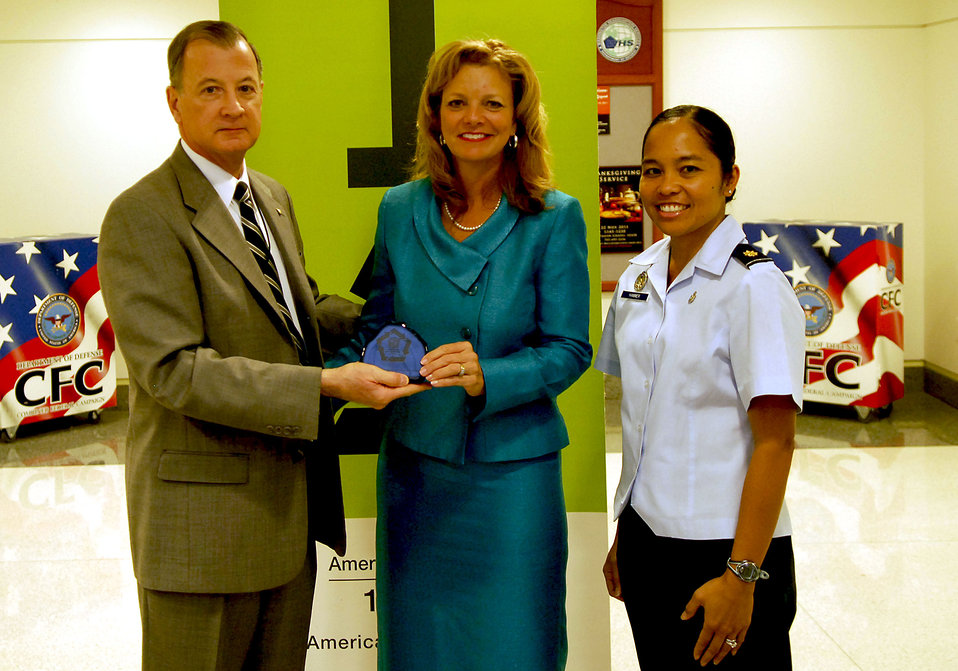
Green Awards

During the Pentagon’s